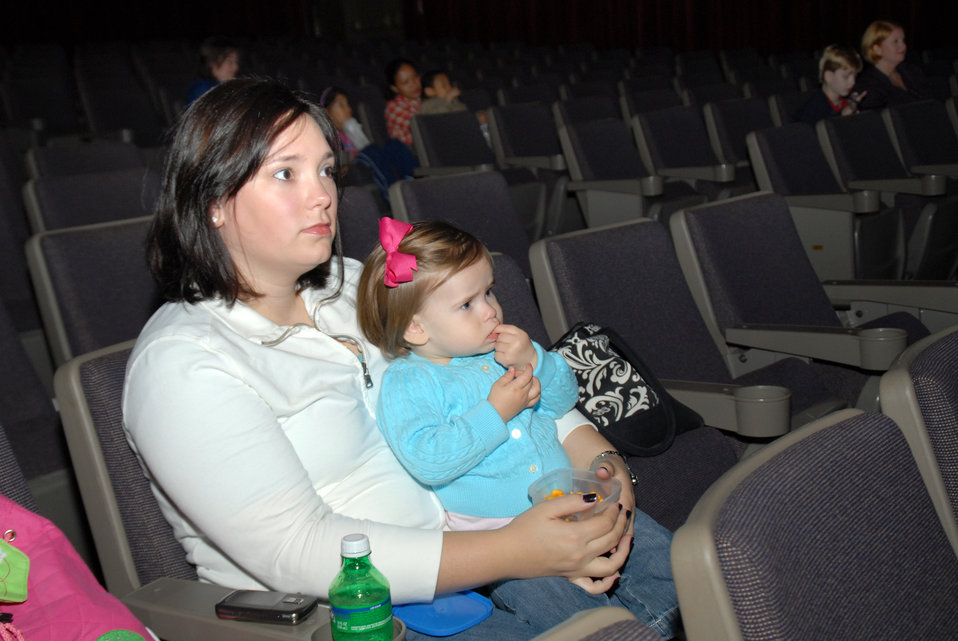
Movie event special experience for Little Rock children

Kristen Boyer and Brooke Boyer attend a special screening of the Disney Pixar film